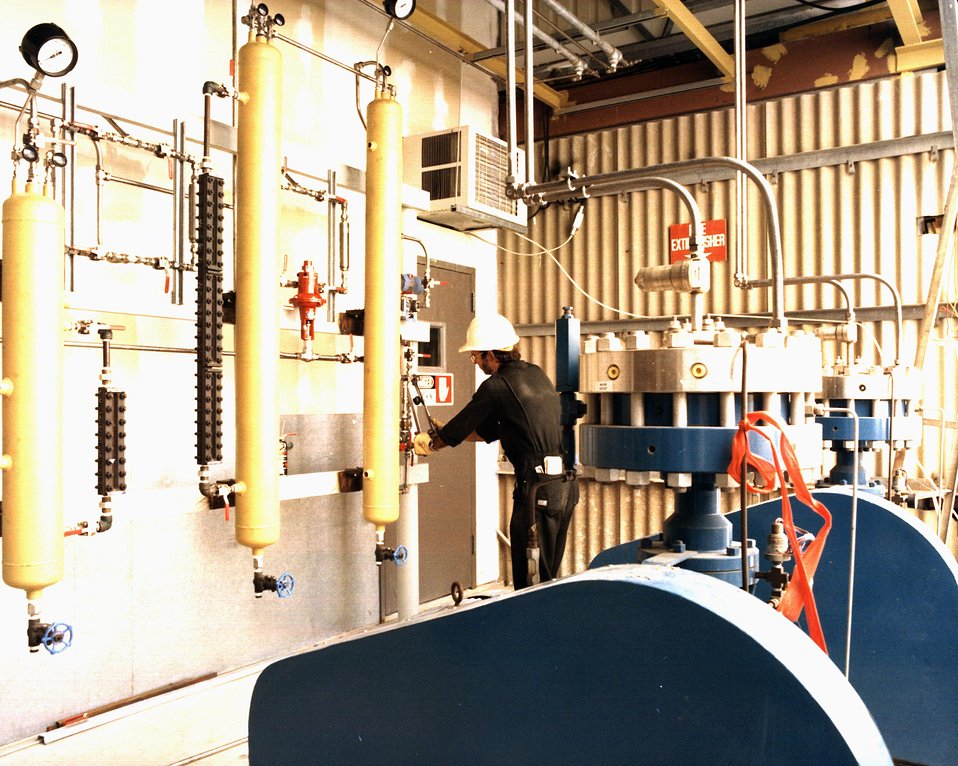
CONSTRUCTION PROGRESS ON THE CATALYTIC COAL GASIFICATION PROCESS DEVELOPMENT UNIT.

THE CATALYTIC COAL GASIFICATION PROCESS IS BEING DEVELOPED IN A JOINT DOE/EXXON PROJECT AT EXXON'S RESEARCH FACILITIES IN BAYTOWN, TEXAS. UNLIKE OTHER COAL GASIFICATION PROCESSES WHICH RELY ON HIGH TEMPERATURES TO MAKE THE COAL REACT WITH STEAM, THE EXXON PROCESS USES A CHEMICAL CATALYST TO SPEED THE REACTION. THIS PROCESSING TECHNIQUE ELIMINATES THE NEED FOR OXYGEN, AN EXPENSIVE RAW MATERIAL NEEDED BY OTHER PRO- CESSES TO GENERATE THE NECESSARY HEAT. INSTEAD, THE HEAT RELEASED BY THE FORMATION OF THE SYNTHETIC GAS PROVIDES THE ENERGY FOR THE CARBON-STEAM REACTION. AN ADDITIONAL ADVANTAGE OF THE CATALYTIC PROCESS IS THAT THE GAS CAN BE RECYCLED CONTINUOUSLY UNTIL IT IS OF HIGH ENOUGH QUALITY TO BE INTRODUCED DIRECTLY INTO PIPELINES WITHOUT FURTHER UPGRADING. MINIMIZING THE DOWNSTREAM EQUIPMENT NEEDED BY OTHER PROCESSES TO MAKE THE GAS SUITABLE FOR PIPELINE TRANSPORT.